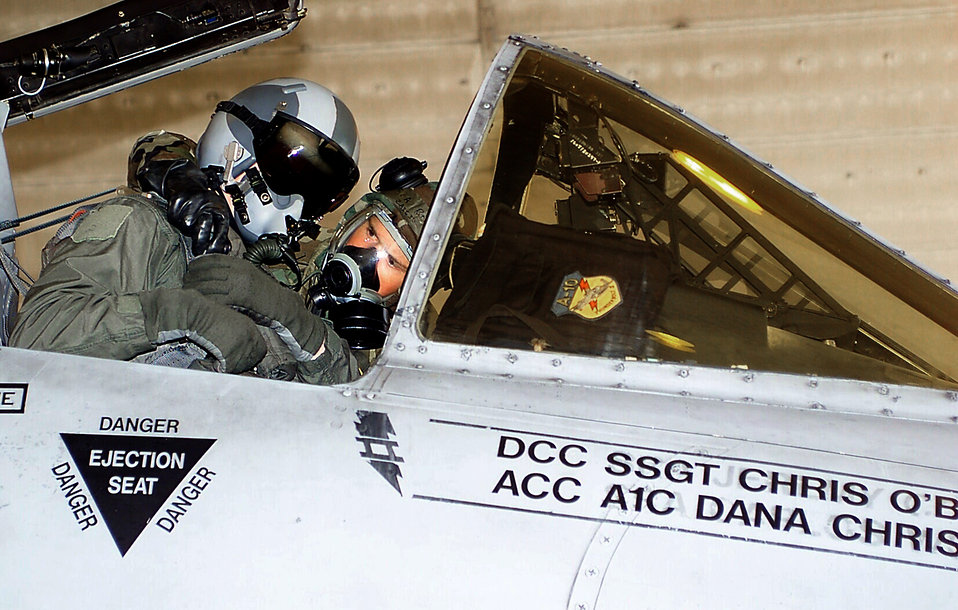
MOPP strap in

OSAN AIR BASE, South Korea -- Senior Airman Scott Bradbury straps 1st Lt. Nathan Raibley into the ejection seat of an A-10 Thunderbolt II dressed in mission-oriented protective posture gear during exercise Beverly Bulldog 01-04 here March 23. Lieutenant Raibley is an A-10 pilot with the 25th Fighter Squadron and Airman Bradbury is a crew chief with the 51st Aircraft Maintenance Squadron.